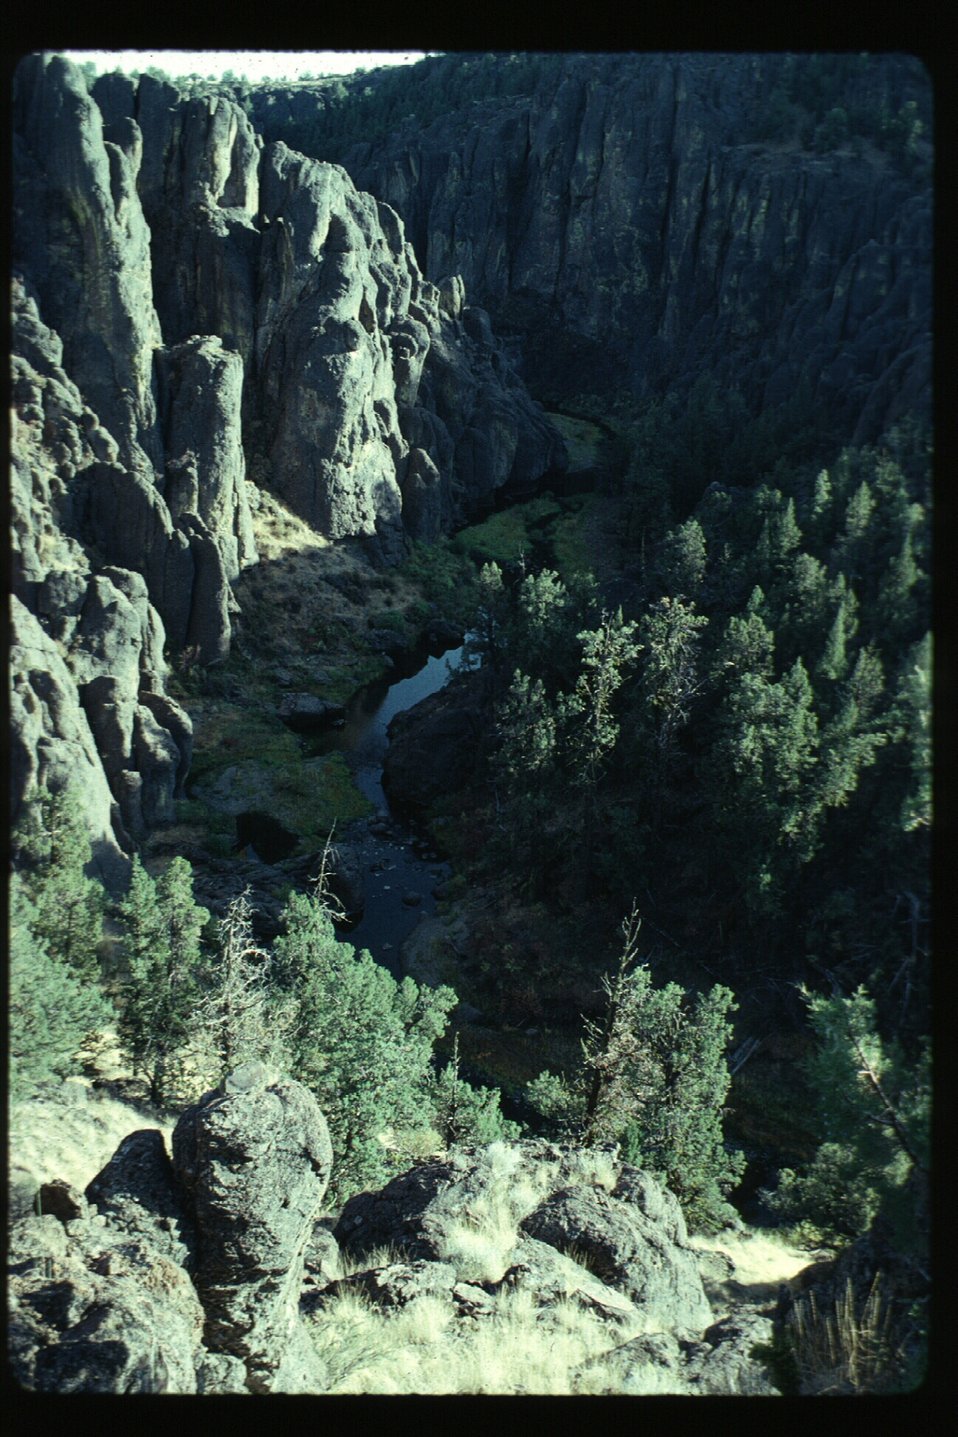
North Fork Owyhee Smurthwaite Rangeland Four Rivers Field Office LSRD Lower Snake River District